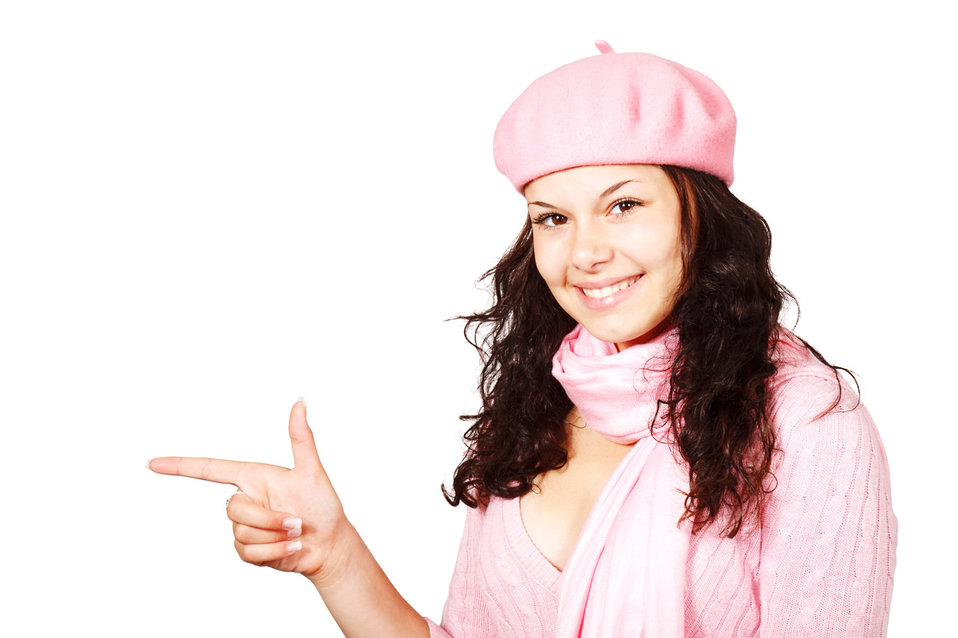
Woman pointing her finger

Young woman in winter pink pointing her finger at something isolated on white background.